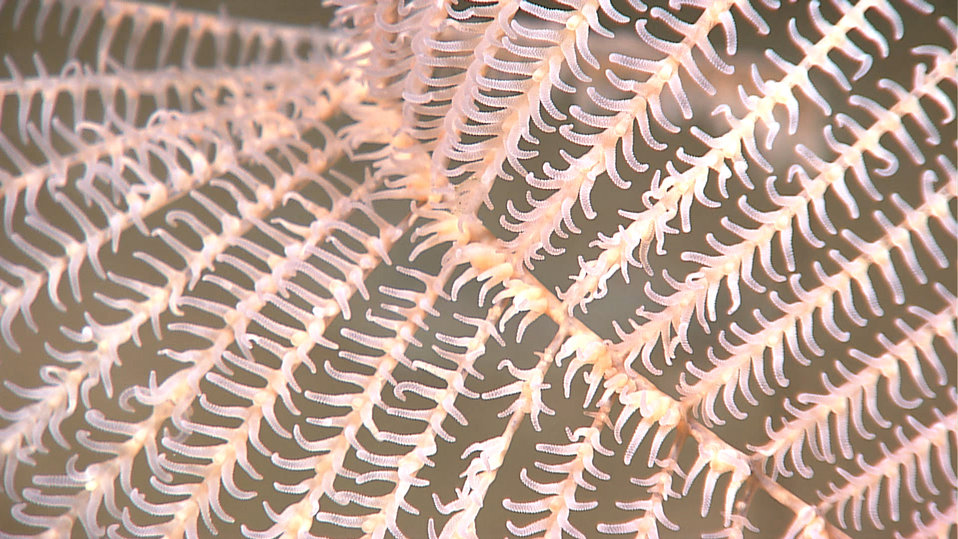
Closeup of polyps on antipatharian 'black coral'